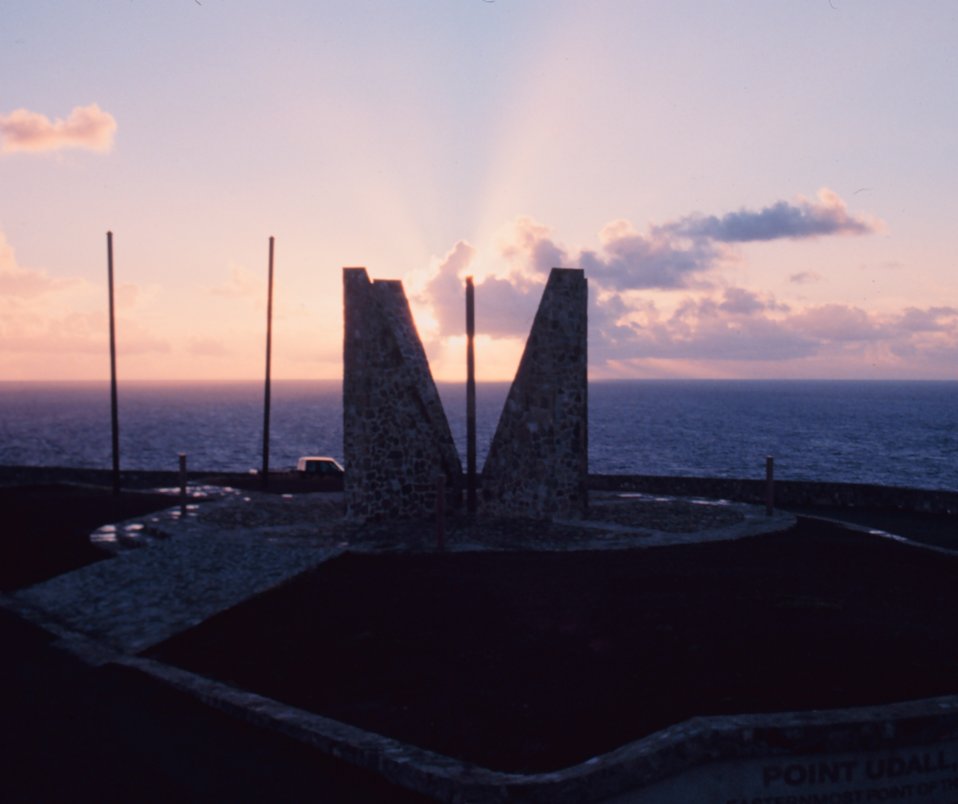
Sunrise at the Point Udall Millennium Monument. Here the new day begins for the United States in the Western Hemisphere. The marker represents 'a continuum between all who have come before and all who are yet to come.'